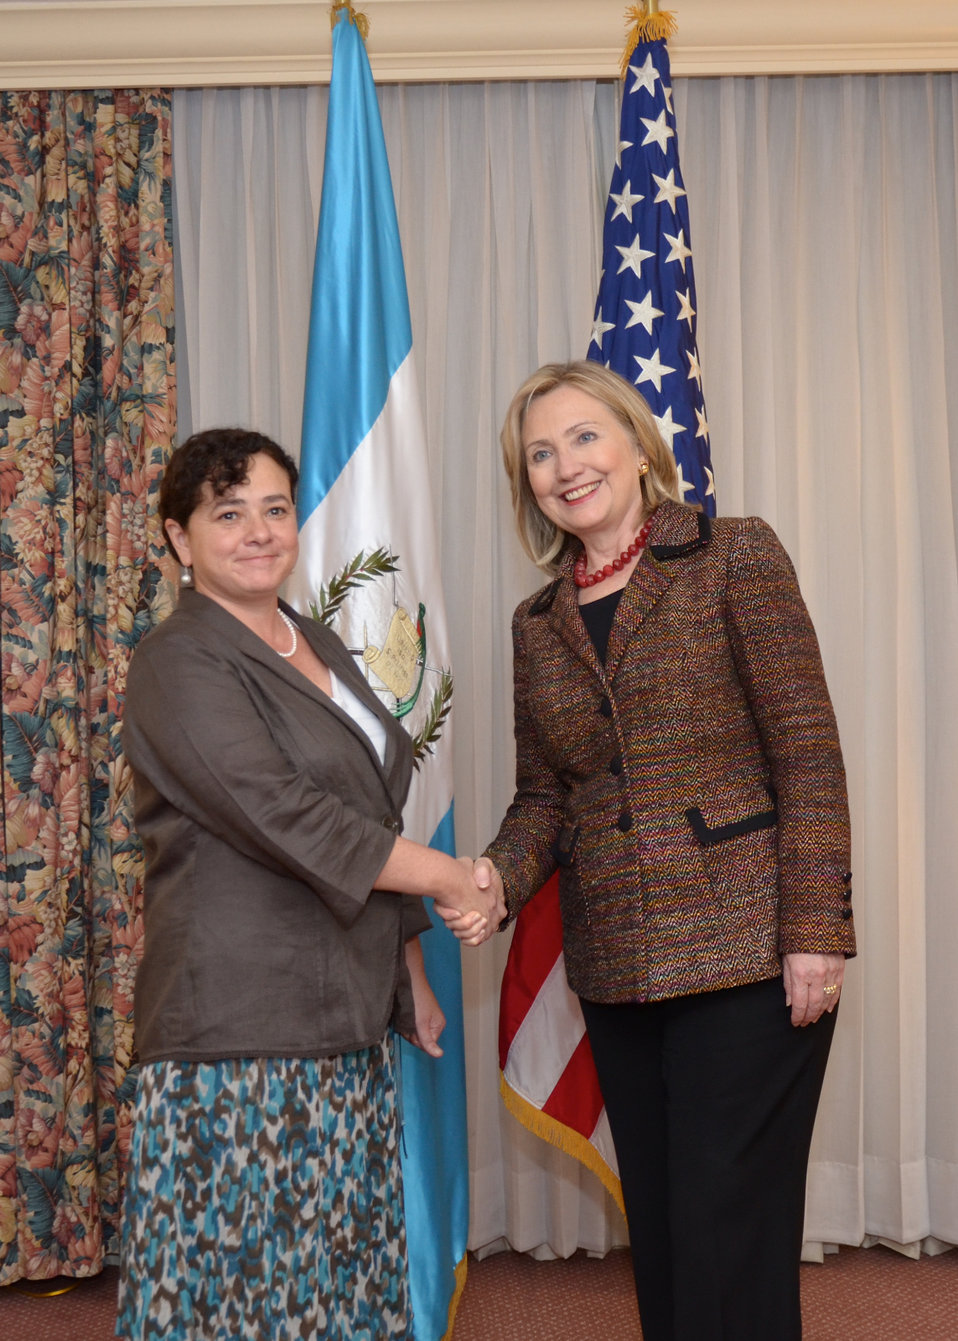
Secretary Clinton Is Greeted By Guatemalan Attorney General Claudia Paz y Paz

U.S. Secretary of State Hillary Rodham Clinton is greeted by Guatemalan Attorney General Claudia Paz y Paz in Guatemala City, Guatemala, on June 22, 2011.